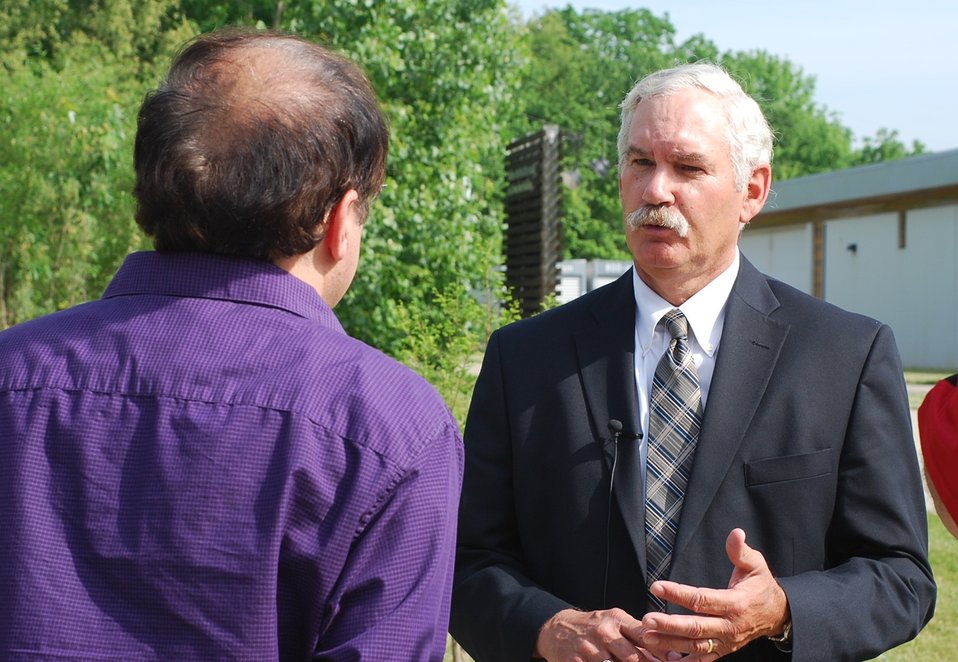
Agriculture Acting Deputy Secretary Michael Scuse meets with the media in Columbus, OH on Thursday, May 30, 2013.